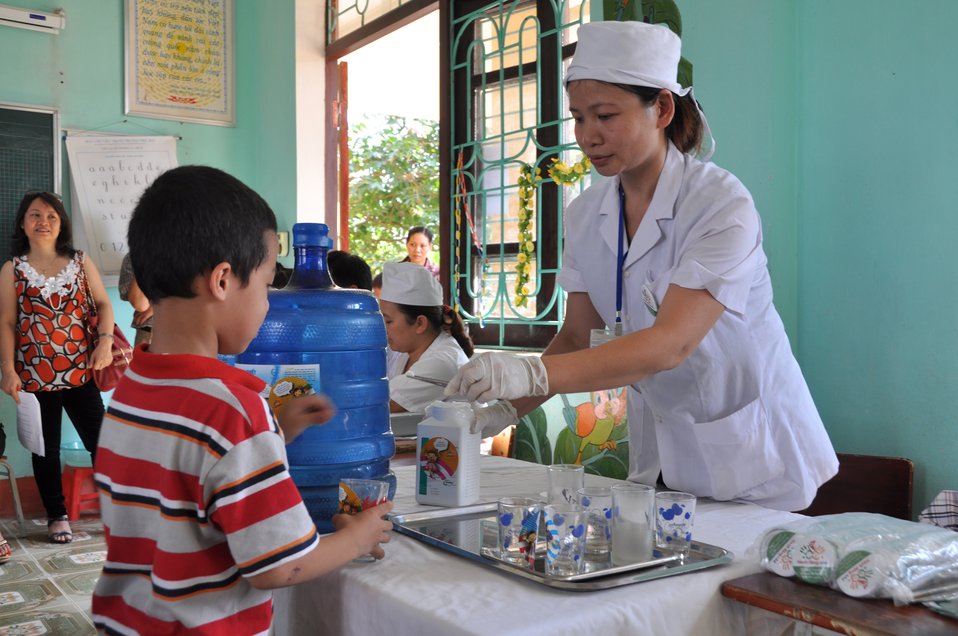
USAID supports deworming education and medication distribution in Bac Giang Province

May 20, 2013